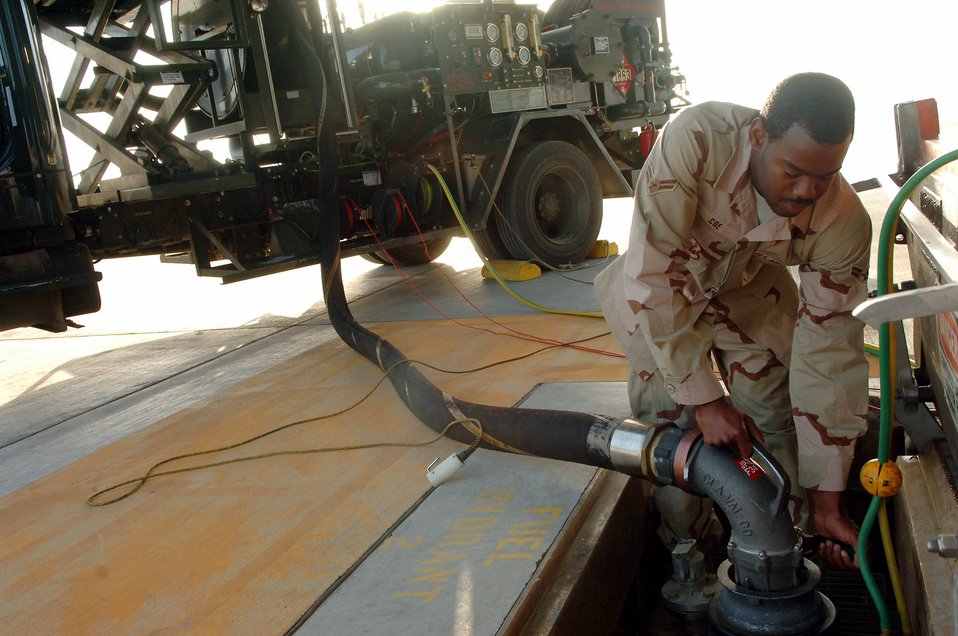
Moody AFB Airman breaks AF refueling record

Airman 1st Class Zechariah Coe connects a fuel hose from an R12 Hydrant Servicing vehicle to an underground fuel storage tank Feb. 25 in Southwest Asia. Airman Coe took on every refueling opportunity he could to pump the more than 3,573,989 gallons of fuel that was required to break the previous record for the largest amount of fuel pumped in a month. Airman Coe is a fuels distribution operator with the 380th Expeditionary Logistics Readiness Squadron.